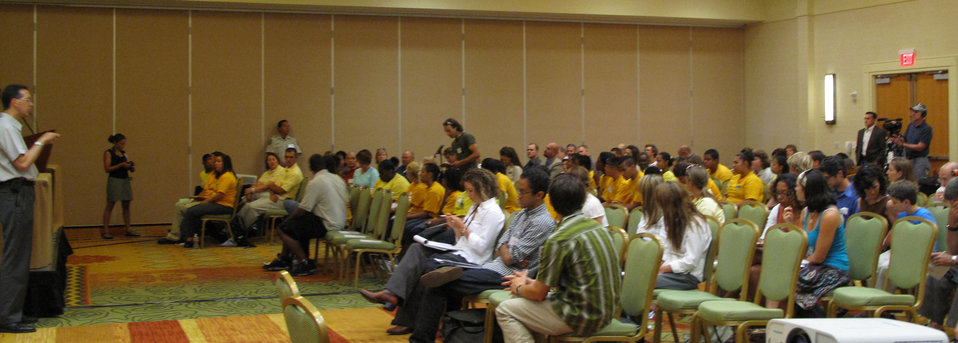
America's Outdoor Initiative Youth Conference